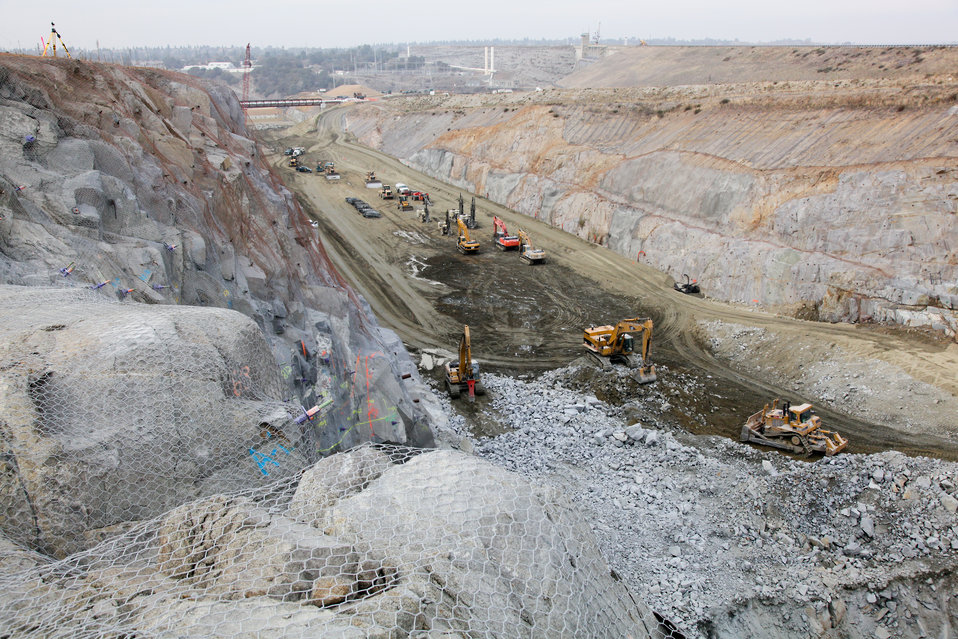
Excavation and rock reinforcement continues at Folsom Joint Federal Project

Excavation of Folsom Dam’s new auxiliary spillway continues in Folsom, Calif., Dec. 29, 2011. The spillway will allow Folsom Dam to release water sooner and more safely. The project is part of the Folsom Dam Joint Federal Project, a joint effort of the U.S. Army Corps of Engineers Sacramento District, the U.S. Bureau of Reclamation, the Central Valley Flood Protection Board and the Sacramento Area Flood Control Agency to improve the safety of the dam and reduce flood risk for the greater Sacramento area.